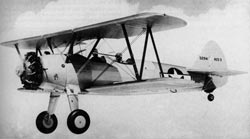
PT-13

The PT-13 was typical of the biplane primary trainer used during the late 1930s and WW II. Whereas it was powered by a Lycoming engine, the same airplane with a Continental engine was designated the PT-17, and with a Jacobs engine, the PT-18. A later version which featured a cockpit canopy was designated the PT-27.